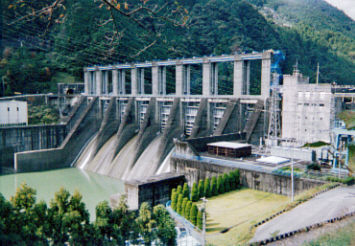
Dam